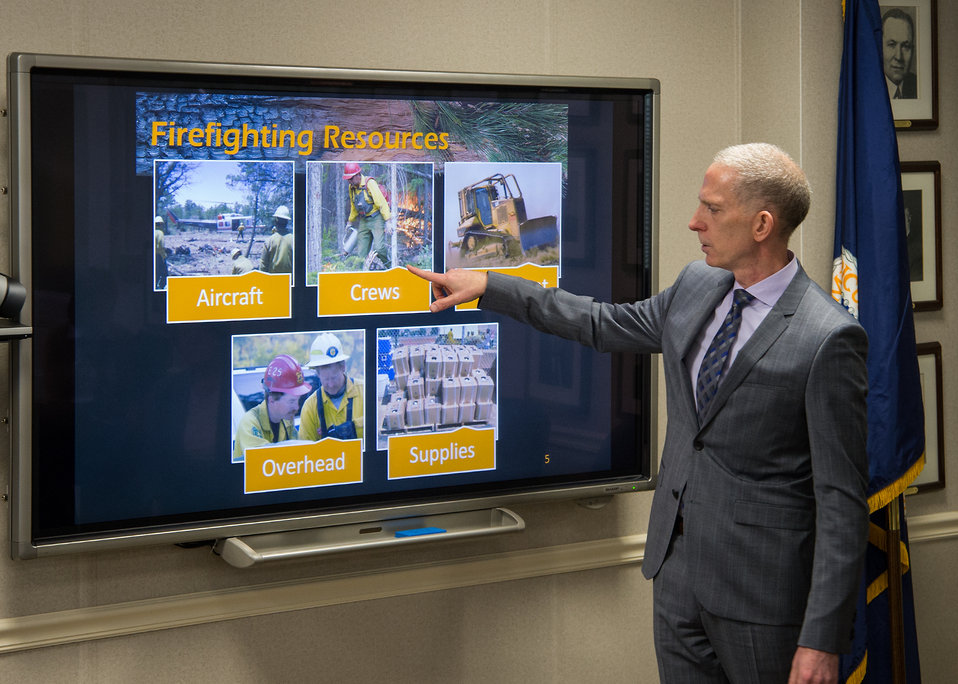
Doug Nash, Forest Service, Chief Information Officer discussed the Fire Mission Resource Ordering and Status System (ROSS) to students from Thomas Jefferson High School of Science and Technology in Alexandria, VA during the U.S. Department of Agriculture (USDA), Office of the Chief Information Officer (OCIO) IT Job Shadow Day, Tuesday, Mar. 25, 2014. The OCIO IT Job Shadow Day hosts students from local high schools in the Washington, D.C. area annually with IT professionals and agricultural specialists from a variety of mission areas at USDA.